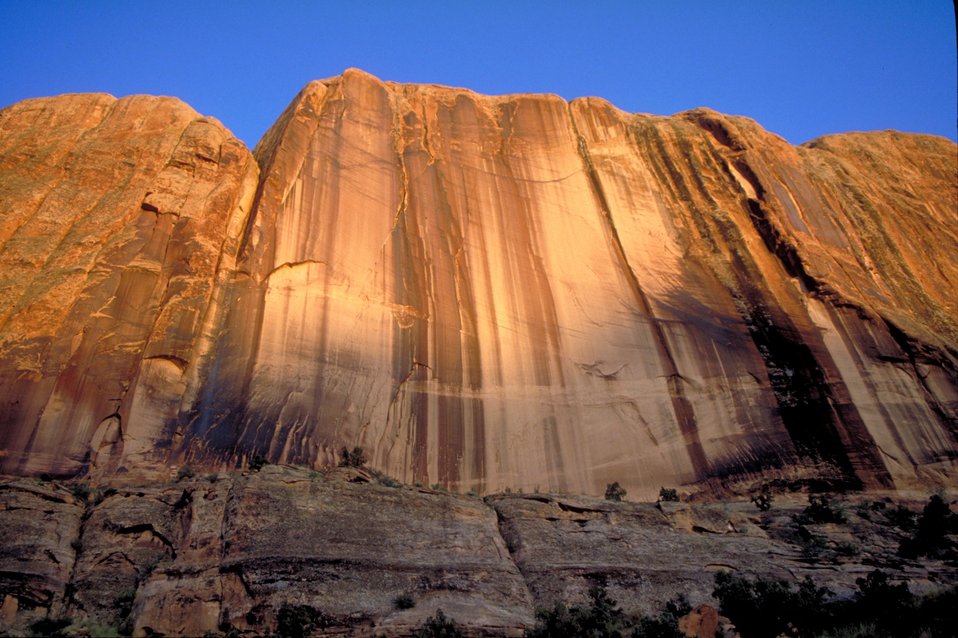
Streaked slickrock canyon wall near Moab, Utah.